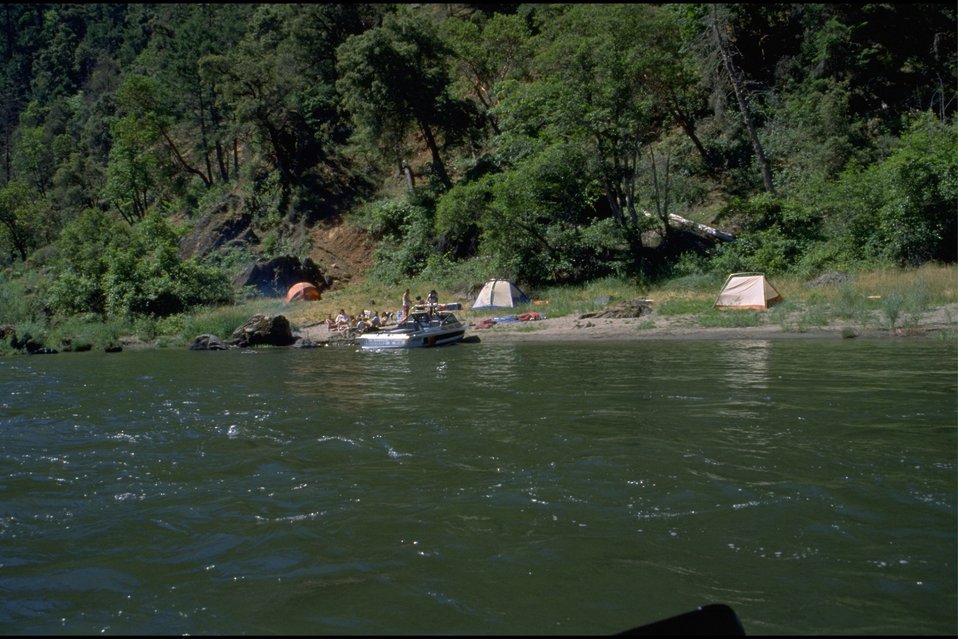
Rogue River - Hellgate Recreation Area. Camp - river left - just above Dunn Rapid.